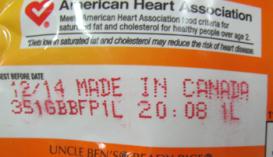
RECALLED – Long Grain White Rice product

February 28, 2014 – Product Recall – Mars Food North America Voluntarily Recalls Specific Batch and Item Number Representing Less Than 3,500 Cases
--No Other UNCLE BEN’S® Products Affected-- For additional information, please refer to the company issued press release available on FDA’s web site at www.fda.gov/Safety/Recalls/ucm387764.htm